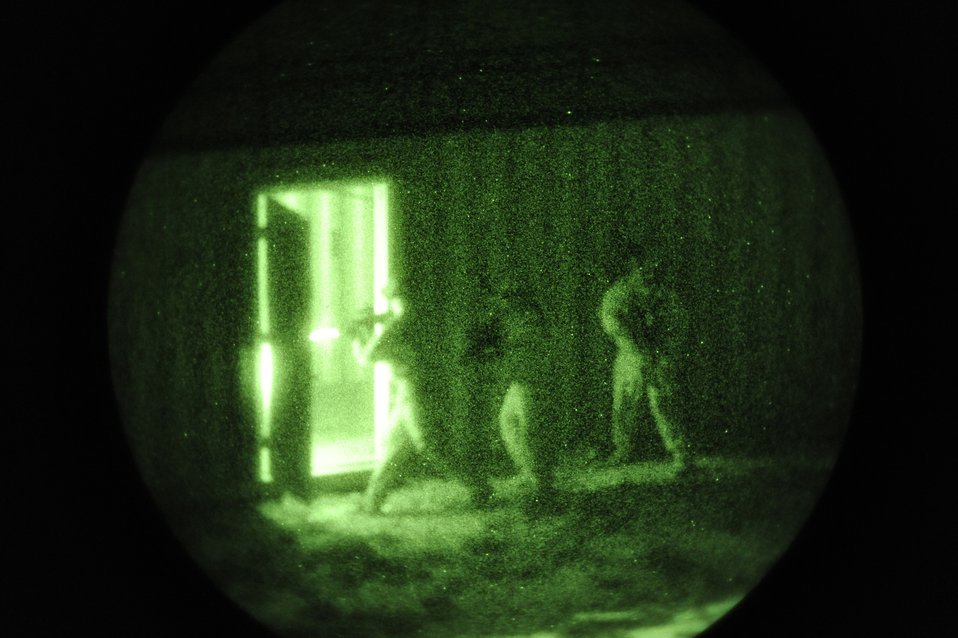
Emerald Warrior

A quick reaction force raids a building Feb. 9 during an Emerald Warrior Exercise training scenario. Air Force Special Operations Command officials are hosting Emerald Warrior to train forces in combat scenarios. The exercise runs until Feb. 13.